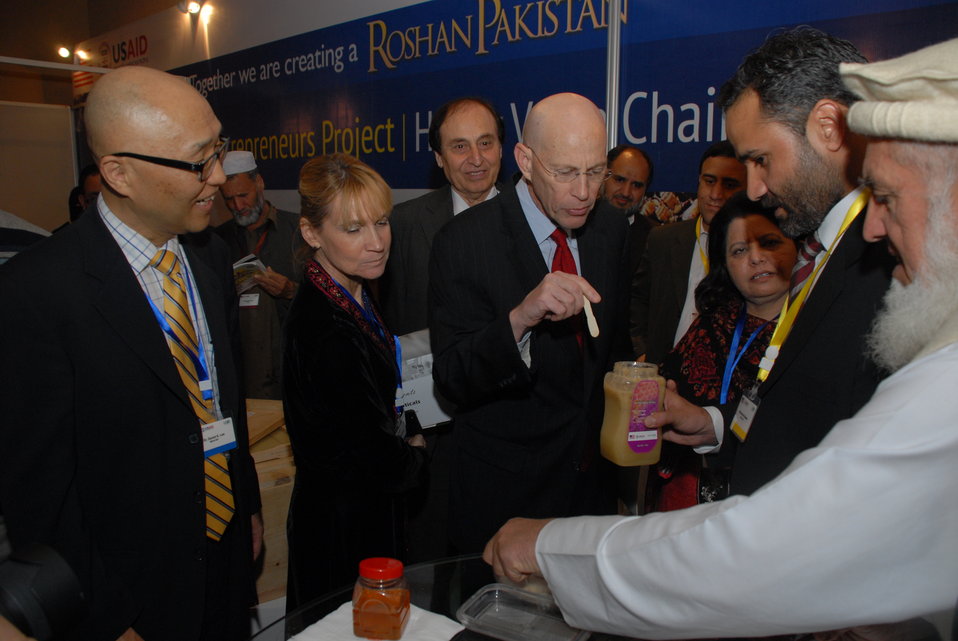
The United States Helps Revitalize Medicinal Plants and Honey Industry in Khyber Pakhtunkhwa 06

Islamabad, February 3, 2014 – The United States, through the U.S. Agency for International Development’s (USAID) Entrepreneurs Project, has trained 24,000 small business owners in the field of medicinal plants and honey. The Medicinal and Aromatic Plants and Honey Industry conference on February 3 featured discussions aimed at developing the medicinal plant and honey sector in Pakistan. Plant collectors and bee-keepers discussed business opportunities with buyers and service providers.